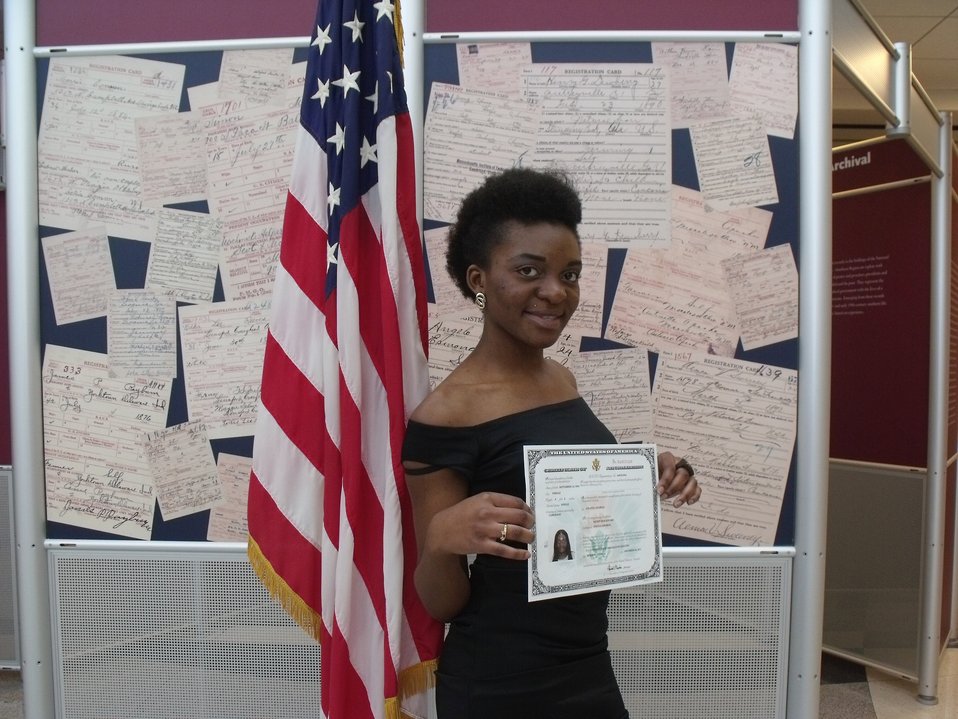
New Citizens